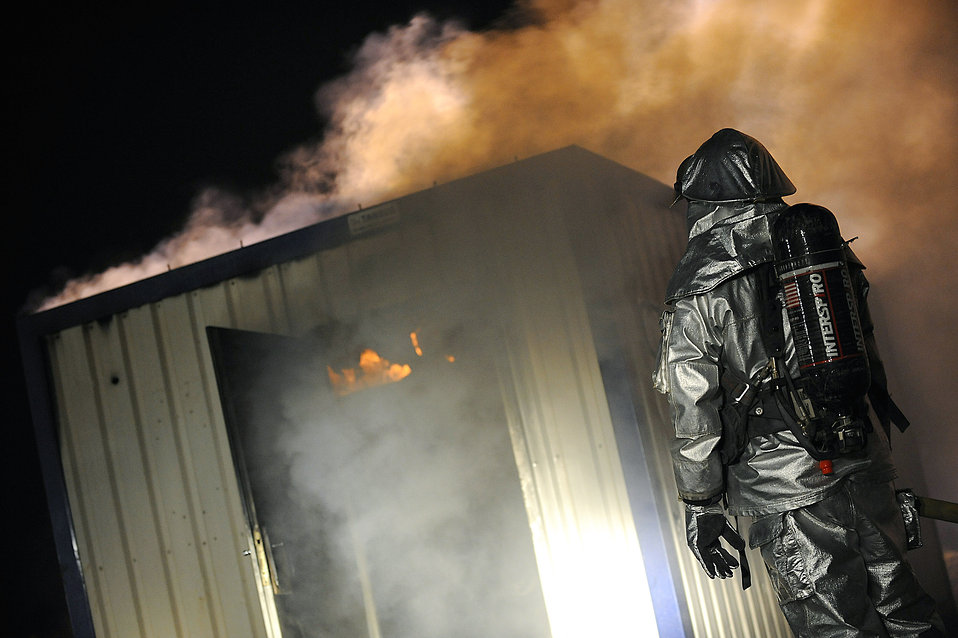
We didn't start the fire

Senior Airman Timothy Weller monitors a burning structure during a controlled burn Oct. 22 at Joint Base Balad, Iraq. Airman Weller is a member of the Joint Base Balad Fire Department, which conducted the burn as part of a live-fire training scenario to give individual firefighters experience using hose patterns on interior fires. He is deployed to the 332nd Expeditionary Civil Engineer Squadron from MacDill Air Force Base, Fla.